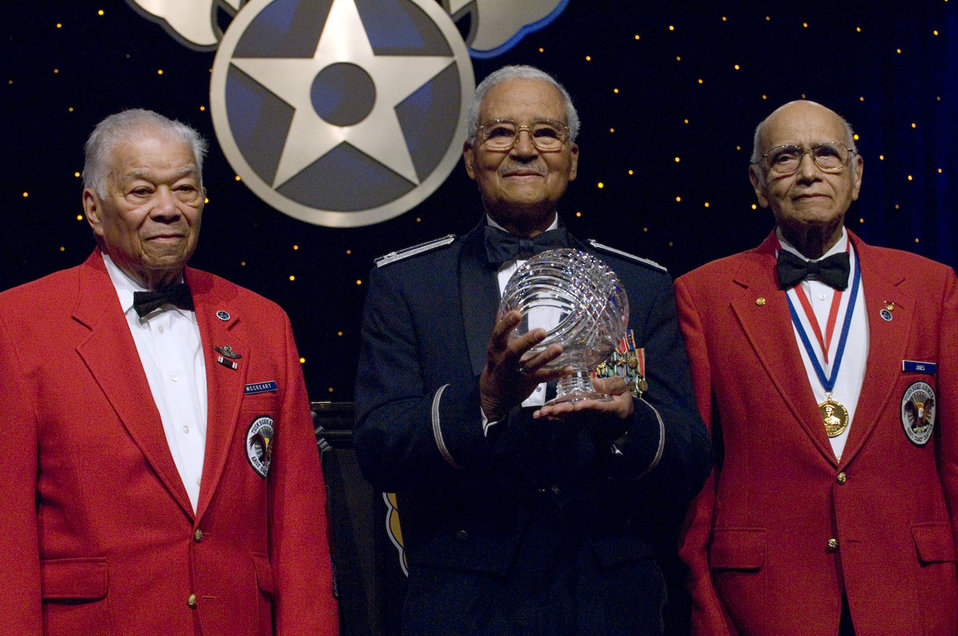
Air Force Association honors Doolittle Raiders, Tuskegee Airmen

Retired Lt. Col. Walter McCreary, retired Col. Charles McGee and retired Col. Elmer Jones hold the Lifetime Achievement Award Sept. 16, 2009, at the Air Force anniversary dinner held at the Gaylord National Hotel and Convention Center in National Harbor, Md. Colonels Jones, McGee and McCreary are members of the Tuskegee Airmen. The dinner was the end of the 2009 Air Force Association Air & Space Conference and Technology Exposition.